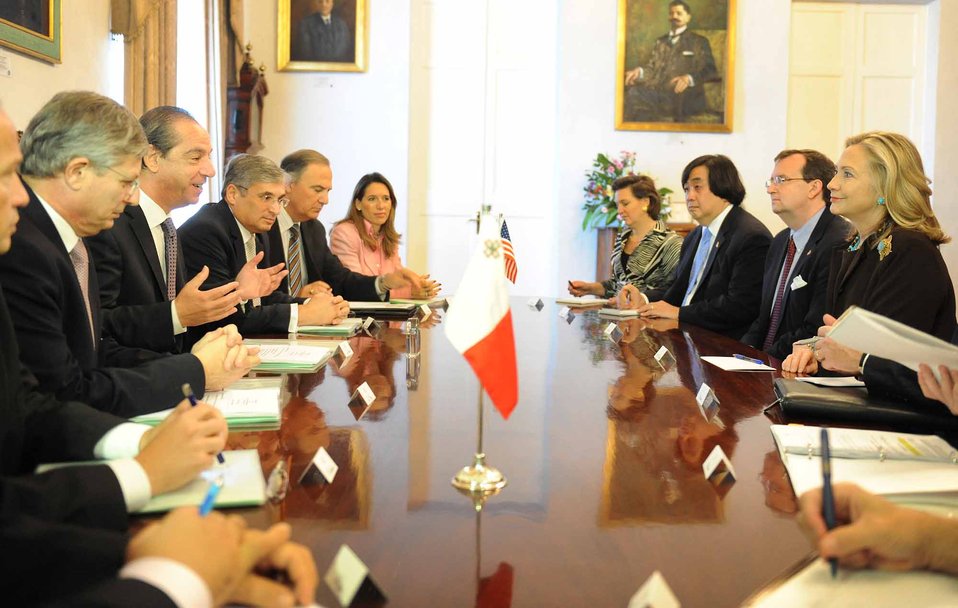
Secretary Clinton Meets With Maltese Officials

U.S. Secretary of State Hillary Rodham Clinton meets with Maltese officials in Valletta, Malta, on October 18, 2011.